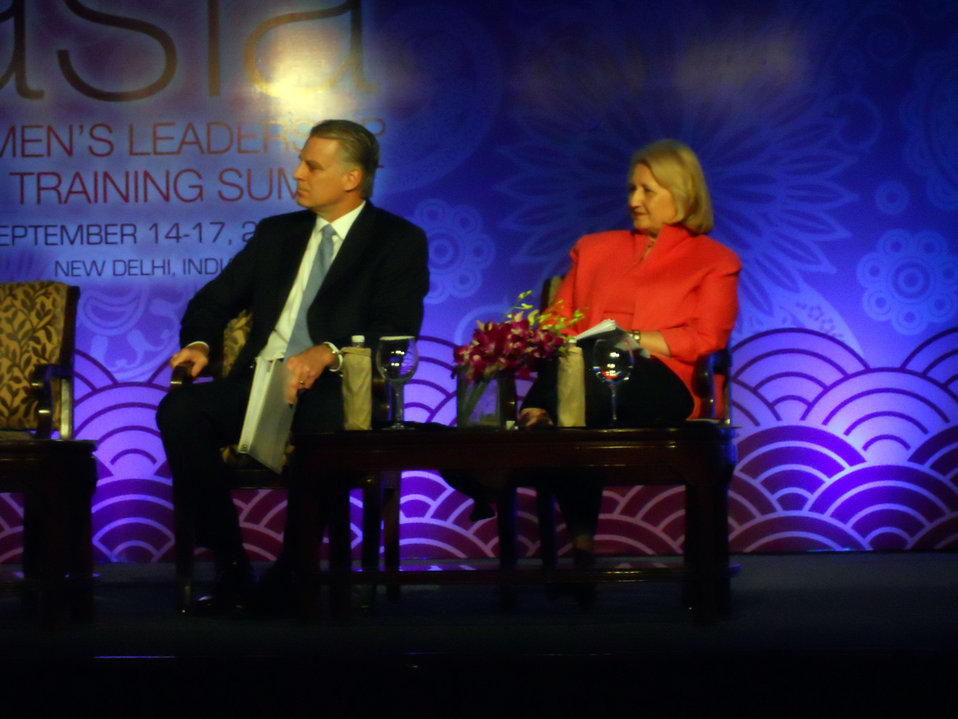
Ambassador Roemer and Ambassador Verveer Participate in a Panel Discussion

U.S. Ambassador to India Timothy J. Roemer (left) and U.S. Ambassador-at-Large for Global Women’s Issues Melanne Verveer (right) participate in a panel discussion moderated by CNN International's Zain Verjee at the Vital Voices Women's Empowerment Summit in New Delhi, India, on September 15, 2010.